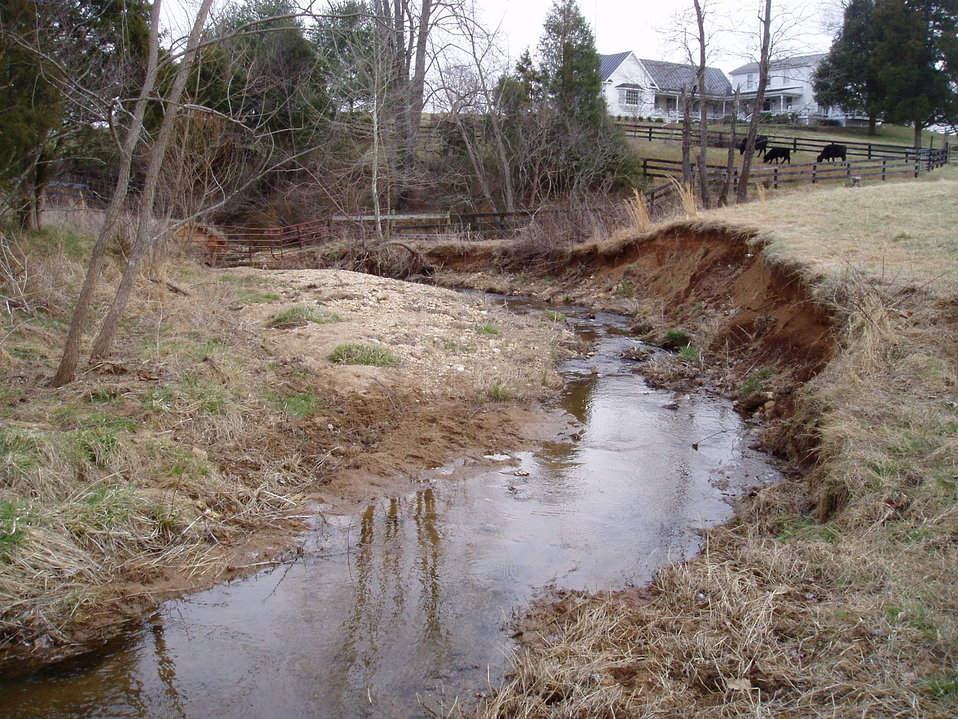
Beaver Run Eroded Streambank Before Construction

This photo shows an eroded streambank at Beaver Run before habitat restoration practices were implemented using natural stream channel design techniques.